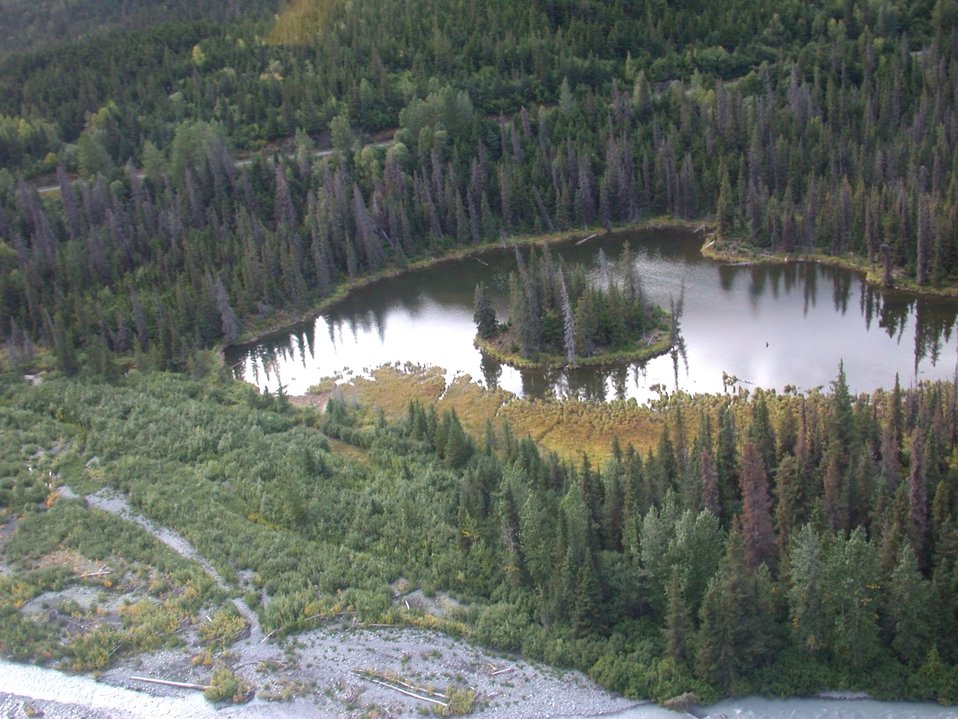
Float plane sightseeing along the Richardson Highway. A small meadow lake with Richardson Highway cutting across the landscape.